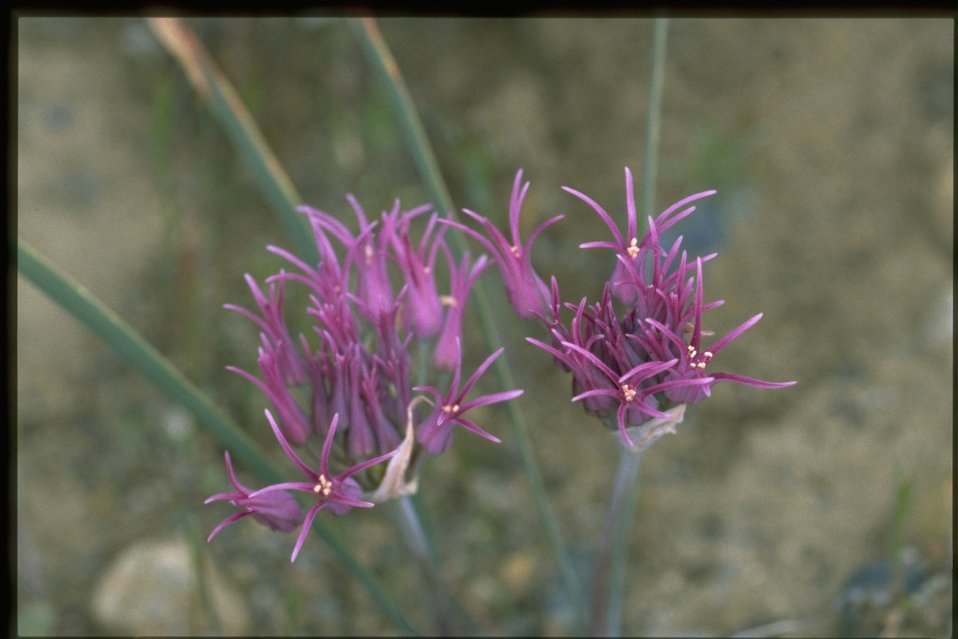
Closeup shot of Allium falcifolium.